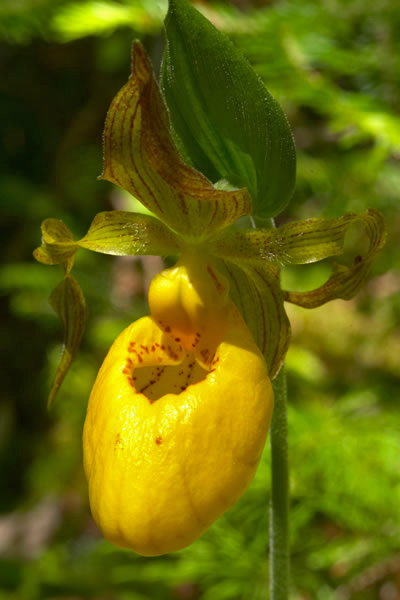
Yellow lady's slipper

Sunkhaze Meadows National Wildlife Refuge, ME.